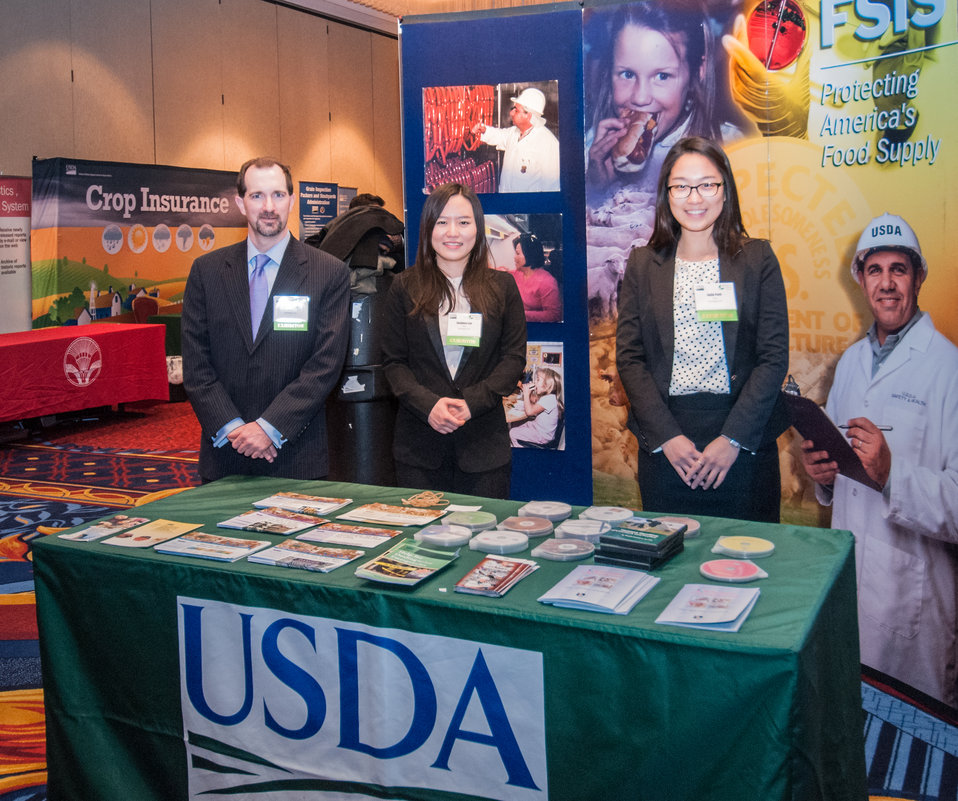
U.S. Department of Agriculture (USDA) Food Safety & Inspection Service’s (FSIS) Keith Payne, left to right, Songhee Lee, and Sujin Park providing information to participants of the 2013 Agricultural Outlook Forum, held at the Crystal Gateway Marriott Hotel, Arlington, Virginia on Thursday, Feb. 21, 2013. This annual Forum brings together producers, policymakers, and business, government, and industry leaders to meet, exchange ideas, and discuss timely agriculture issues.